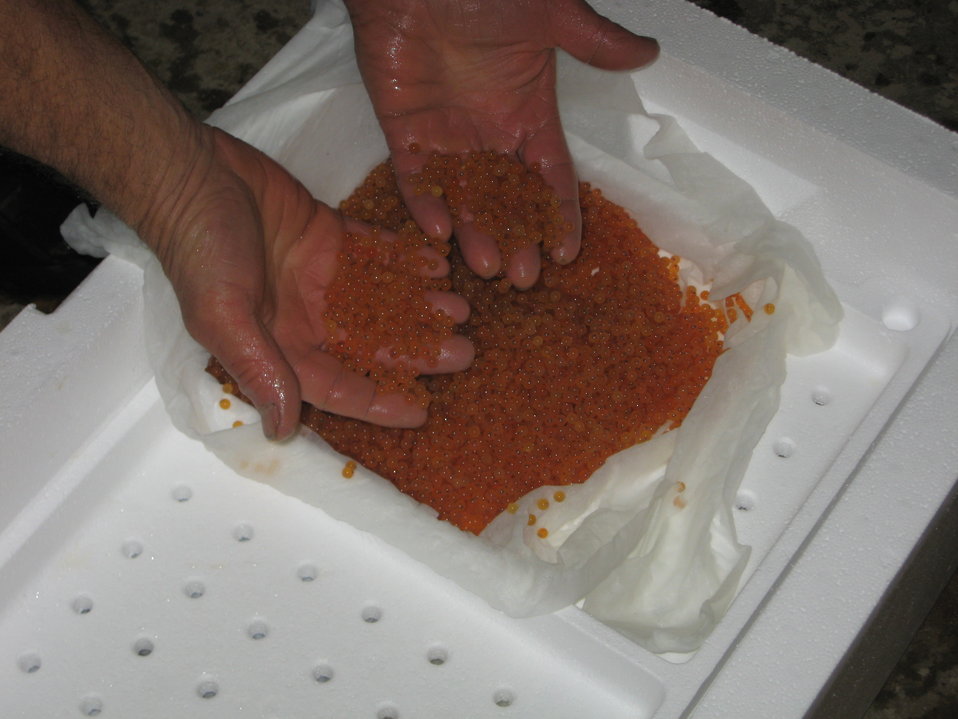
Hatchery receives lake trout eggs

In December, the hatchery received at total of one million lake trout eggs from the State of Vermont’s Salisbury Fish Hatchery and the Sullivan Creek National Fish Hatchery in Michigan.